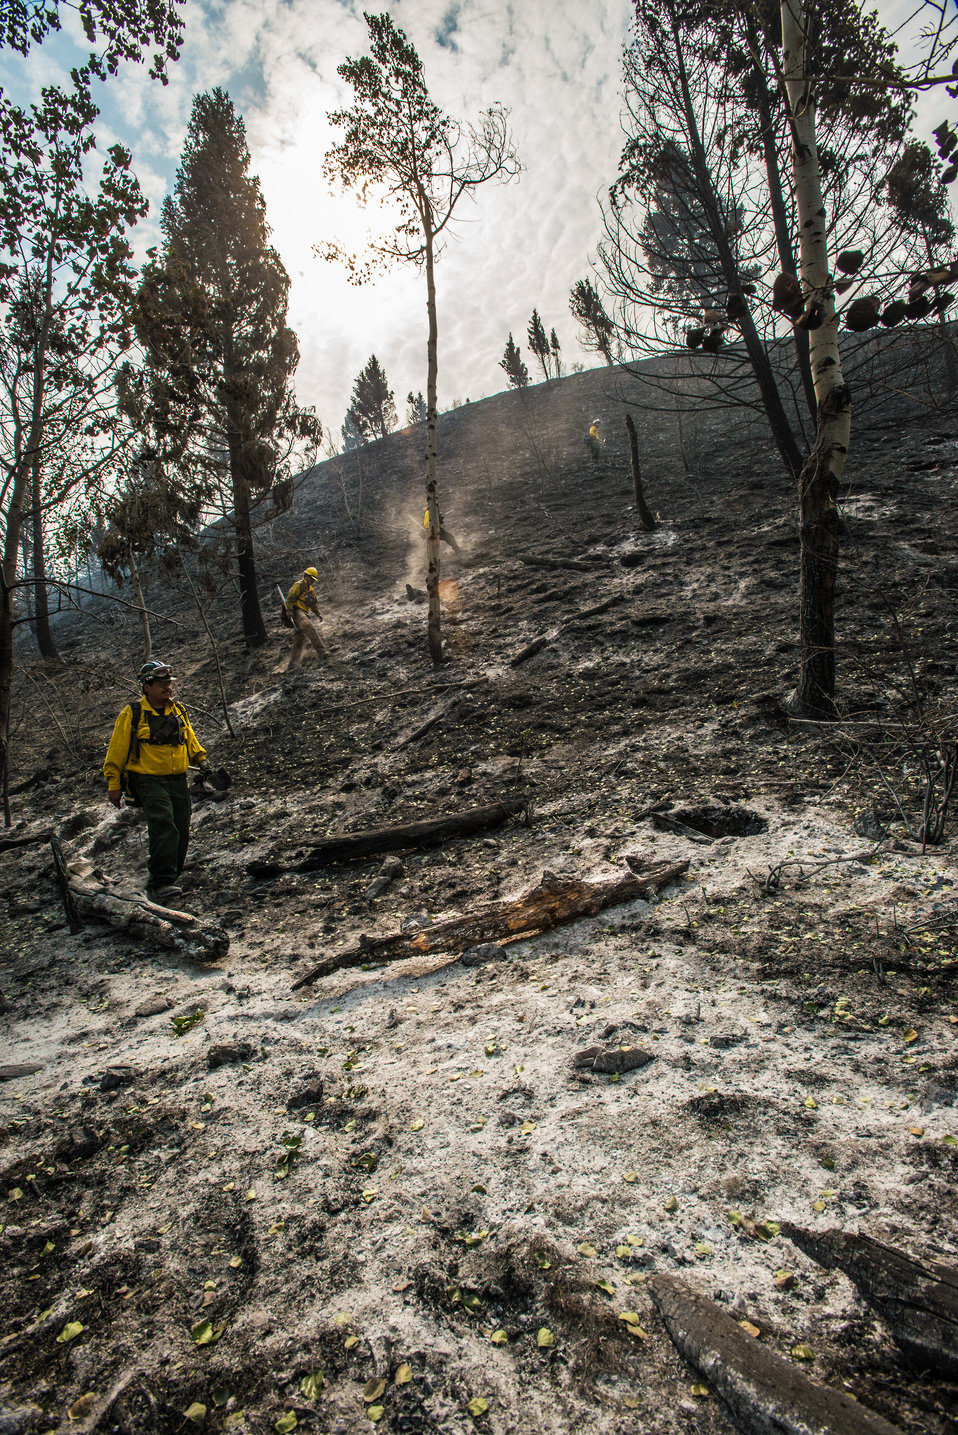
Department of the Interior, Indian Affairs (BIA) Southern Plains Initial Attack Type 2 Crew Squad Boss Trainee Bobby Robedeaux, of the Pawnee, Ponca and Otoe tribes, traverses a burned out hillside, looking and feeling for hotspots above and below the ground, during the Beaver Creek Fire, west of Hailey, ID, in the interface between U.S. Department of Agriculture (USDA) Forest Service (FS) and Sawtooth National Forest and Bureau of Land Management (BLM) lands, on Wednesday, Aug 21, 2013.